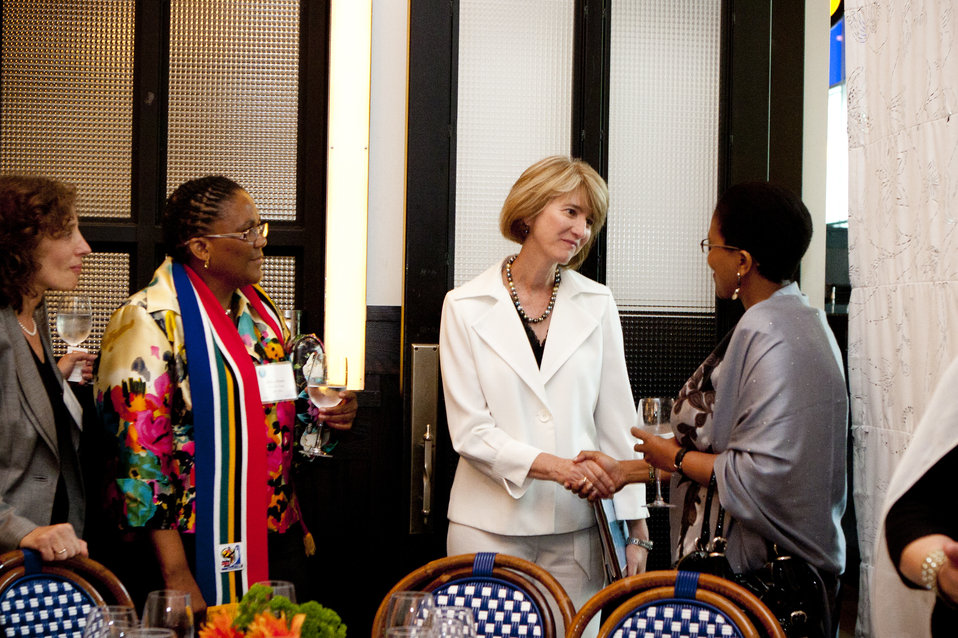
WomenandEnergy 34